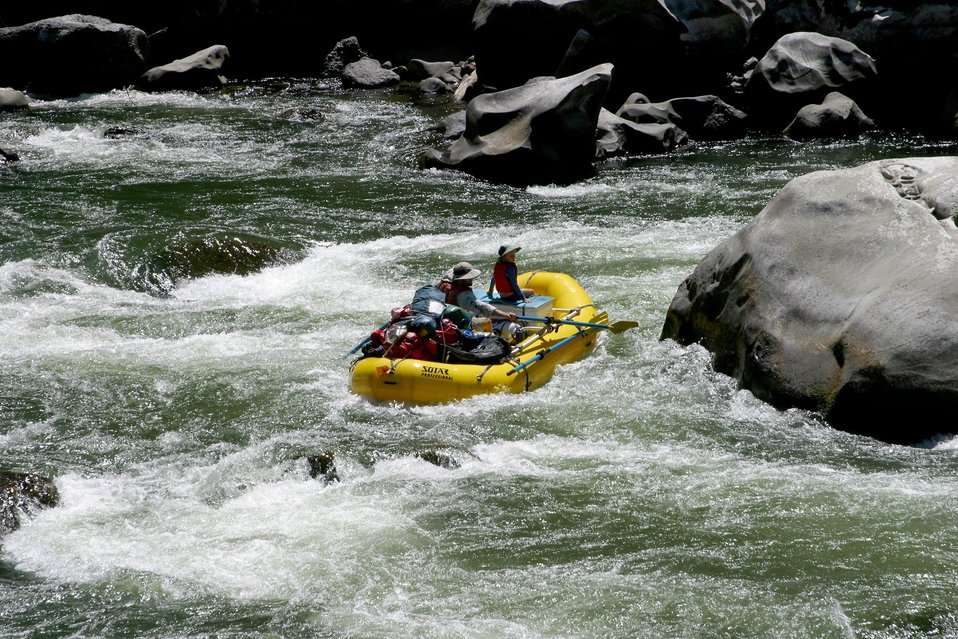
Blossom Rapids.